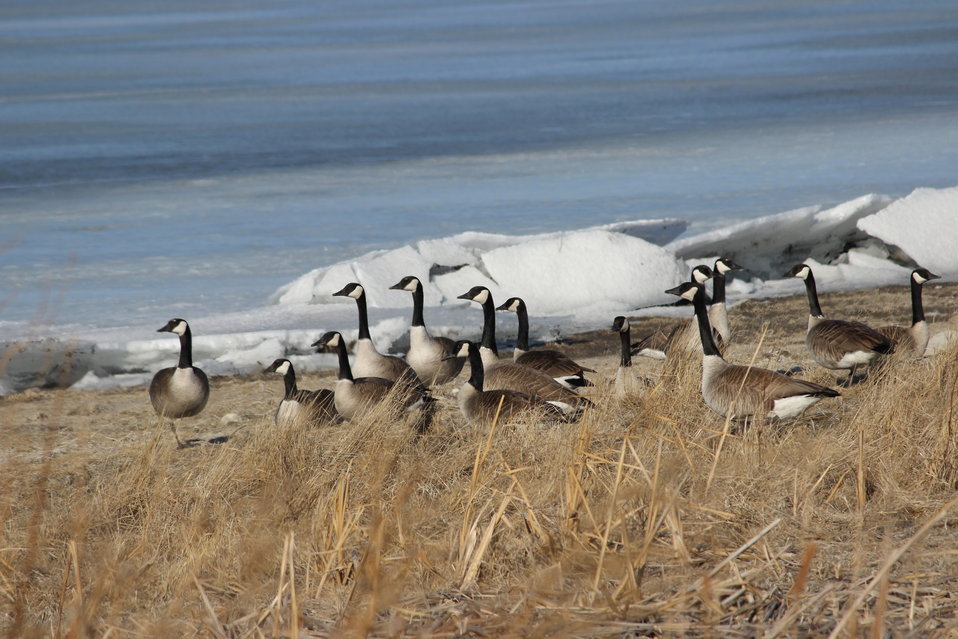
Oh Canada

These Canada geese (Branta canadensis) may or may not stay in the Kulm, North Dakota area to nest and raise their young. These large waterfowl have made an enormous recovery since the giant subspecies was thought to be extinct in the 1950s. Recovery efforts by the Northern Prairie Wildlife Research Center near Jamestown, ND included the release of over 6,000 individuals by 1981. This goose is now so abundant, that some would call it a pest.